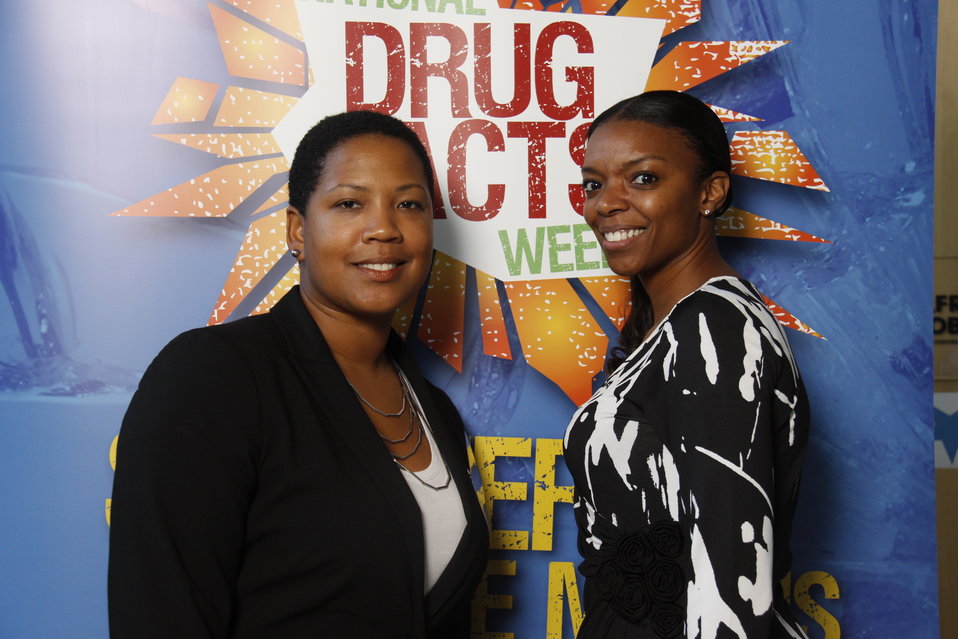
NDFW Mentor Event